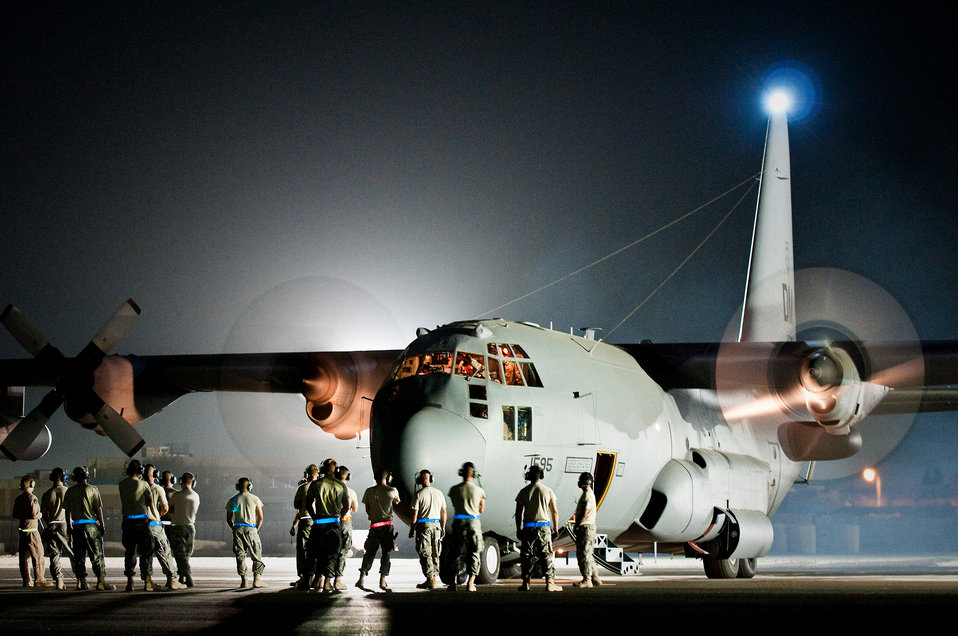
Moving Day

Maintenance troops and aircrew members prepare an EC-130H Compass Call for its final departure from an air base in Southwest Asia Aug. 29, 2010. The plane's unit, the 43rd Expeditionary Electronic Combat Squadron, is moving to another base in the U.S. Central Command area of responsibility.